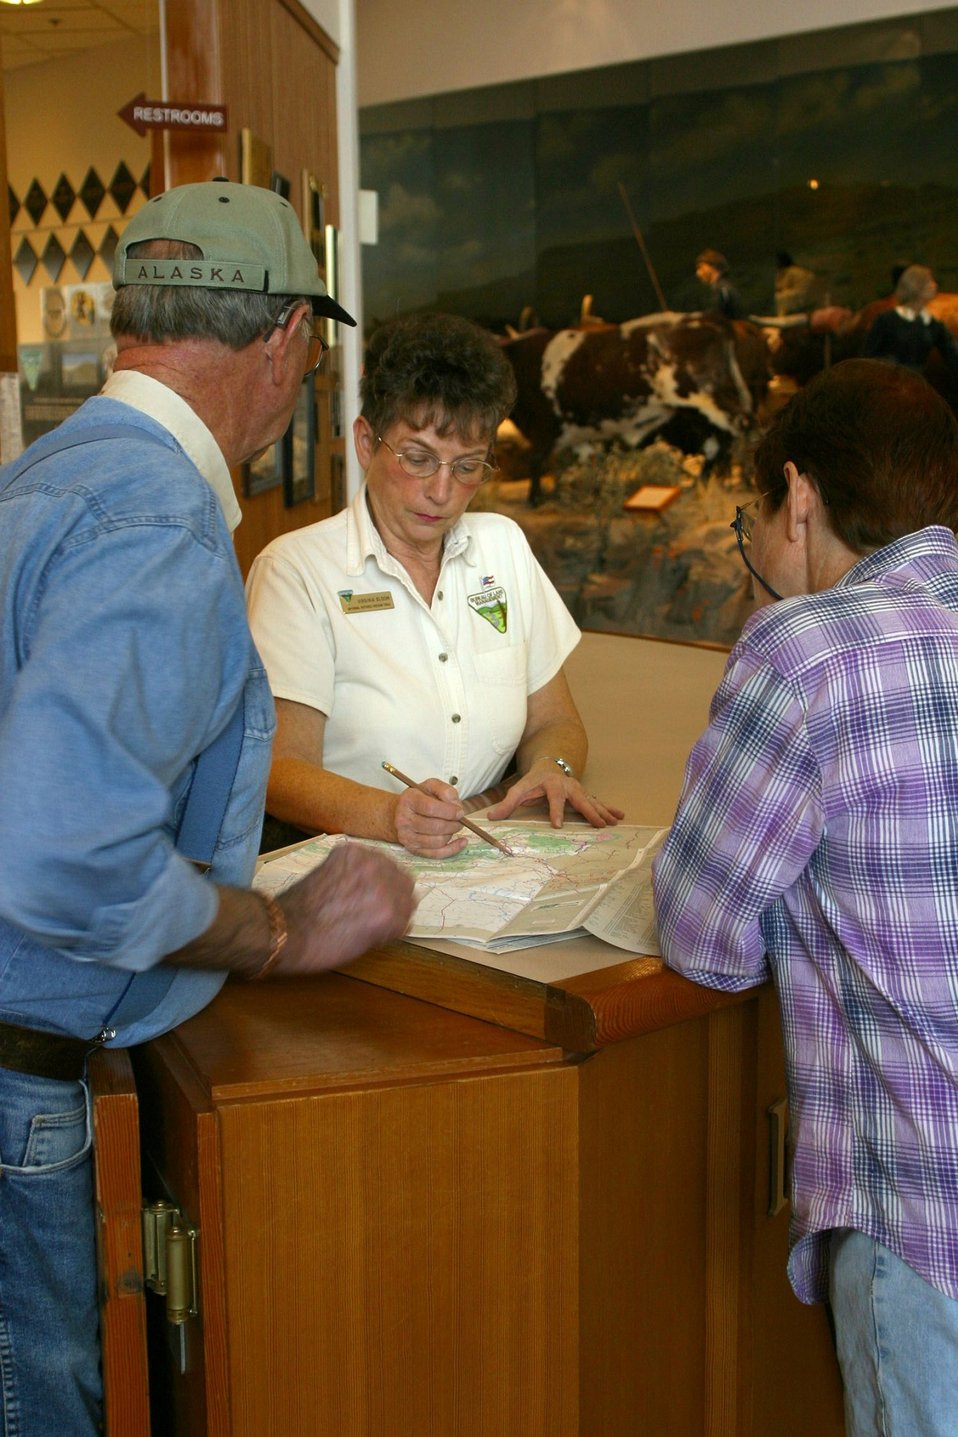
BLM employee Virginia Bloom giving visitors information about the Interpretive Center and the surrounding area.